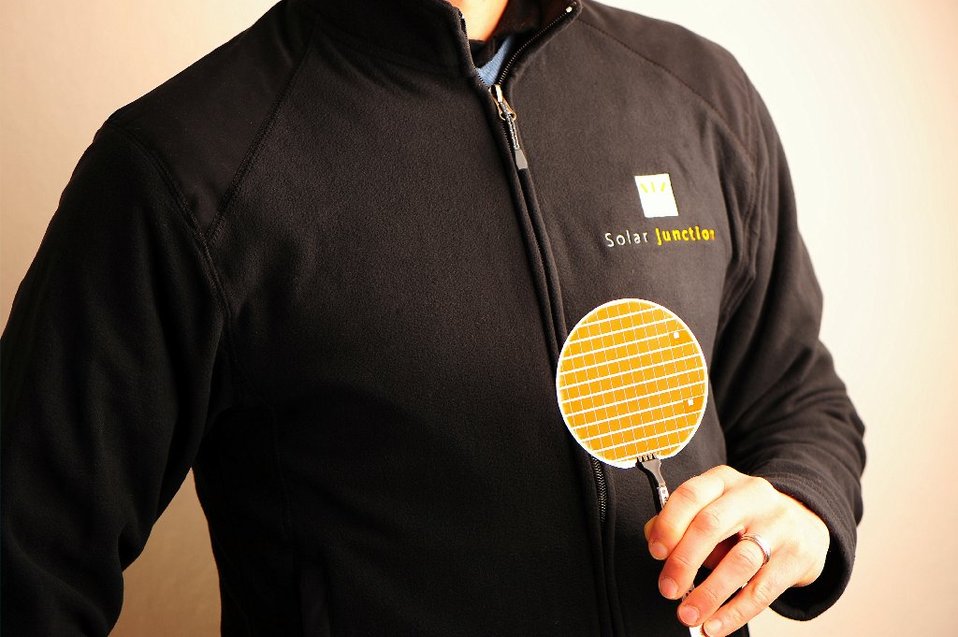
Record-Breaking Solar

This concentrating photovoltaic (CPV) cell -- which uses a focused lens to magnify light to 418 times the intensity of the sun -- earned an R&D100 Award and set a new world record of 43.5 percent for solar cell conversion efficiency. The technology is based on high-efficiency multijunction research pioneered by the National Renewable Energy Laboratory (NREL).